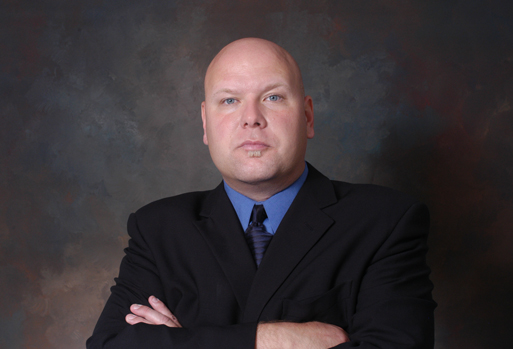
Mark Shelton Credit Chairman self-made photograph Chicago, Illinois